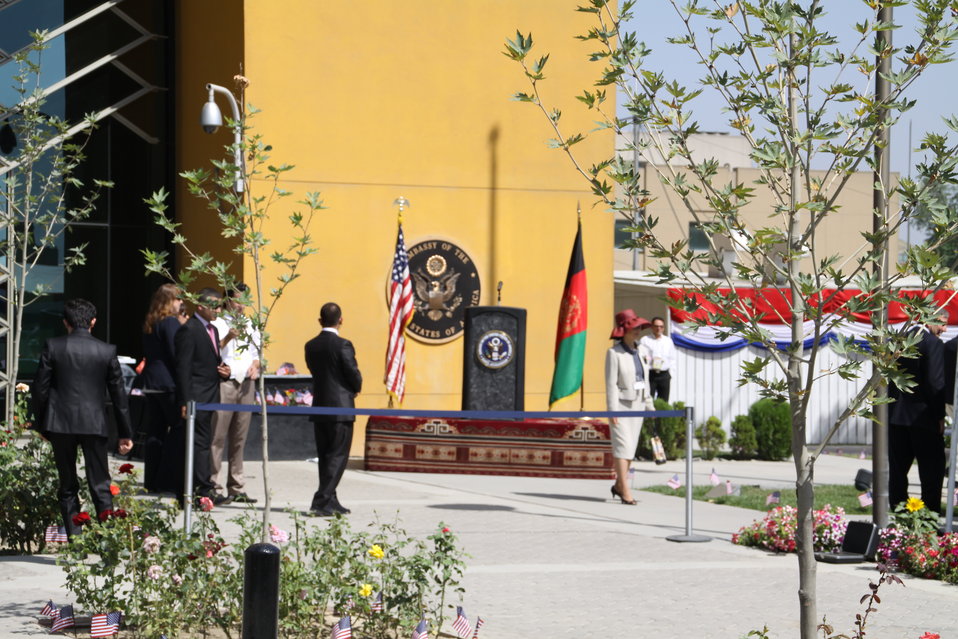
Kabul Official July 4th Celebration